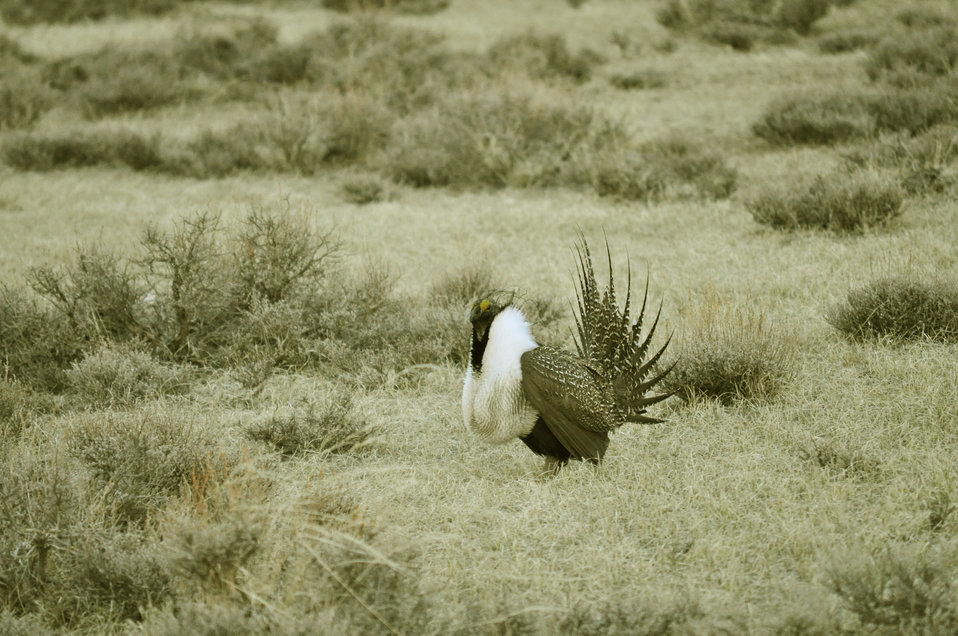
Male greater sage-grouse struts at lek (dancing or mating grounds) to attract females near Bodie, California.